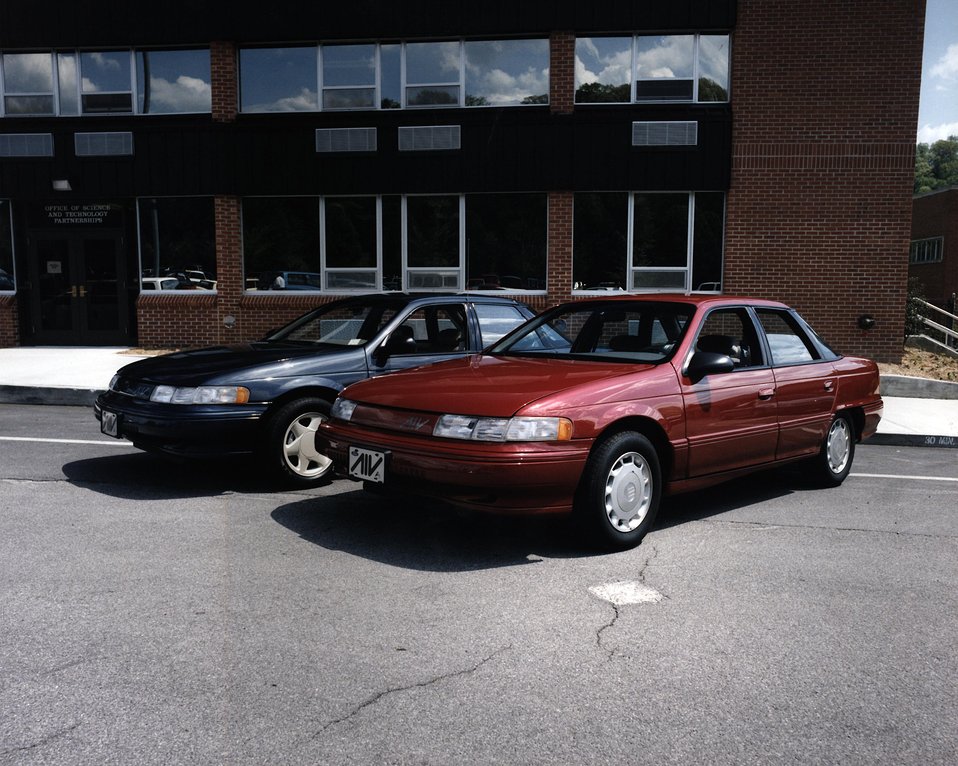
ALUMINUM INTENSIVE VEHICLE (AIV) FROM THE PNGV PROGRAM.

ORNL IS THE SITE OF MUCH OF THE RESEARCH TO DEVELOP CARS OF THE FUTURE THROUGH THE PARTNERSHIP FOR A NEW GENERATION OF VEHICLES. PNGV IS A PARTNERSHIP BETWEEN THE U.S. GOVT. AND THE U.S. COUNCIL FOR AUTOMOTIVE RESEARCH, REPRESENTING FORD, CHRYSLER AND GENERAL MOTORS. THE EFFORTS INCLUDE DEVELOPING COST EFFECTIVE MASS PRODUCTION TECHNOLOGY REDUCING AUTOMOBILE WEIGHT USING ALUMINUM, IMPROVING FUEL EFFICIENCY AND LOWERING ADMISSIONS.